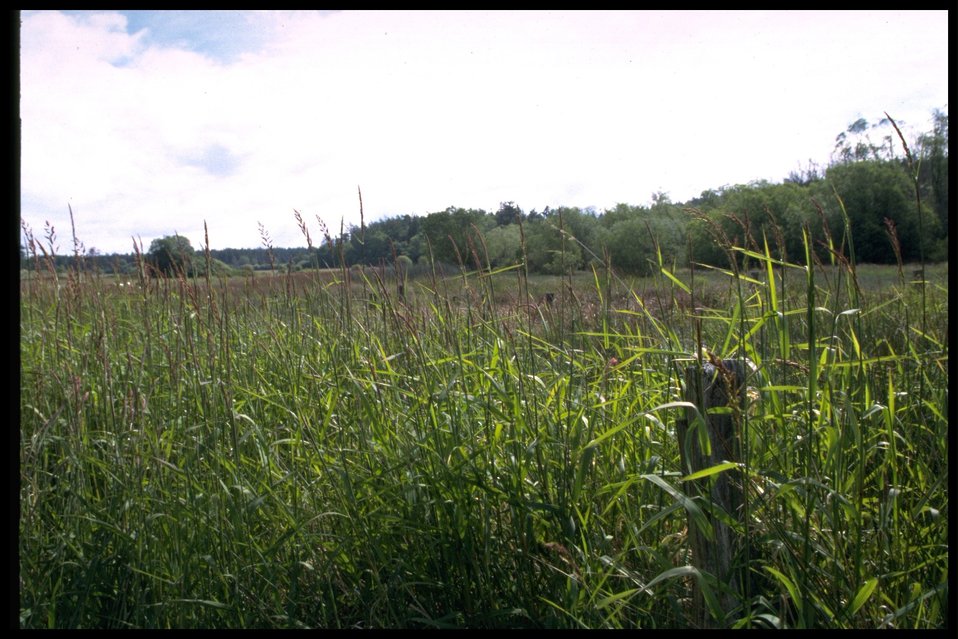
Chadwick Hill Marsh.